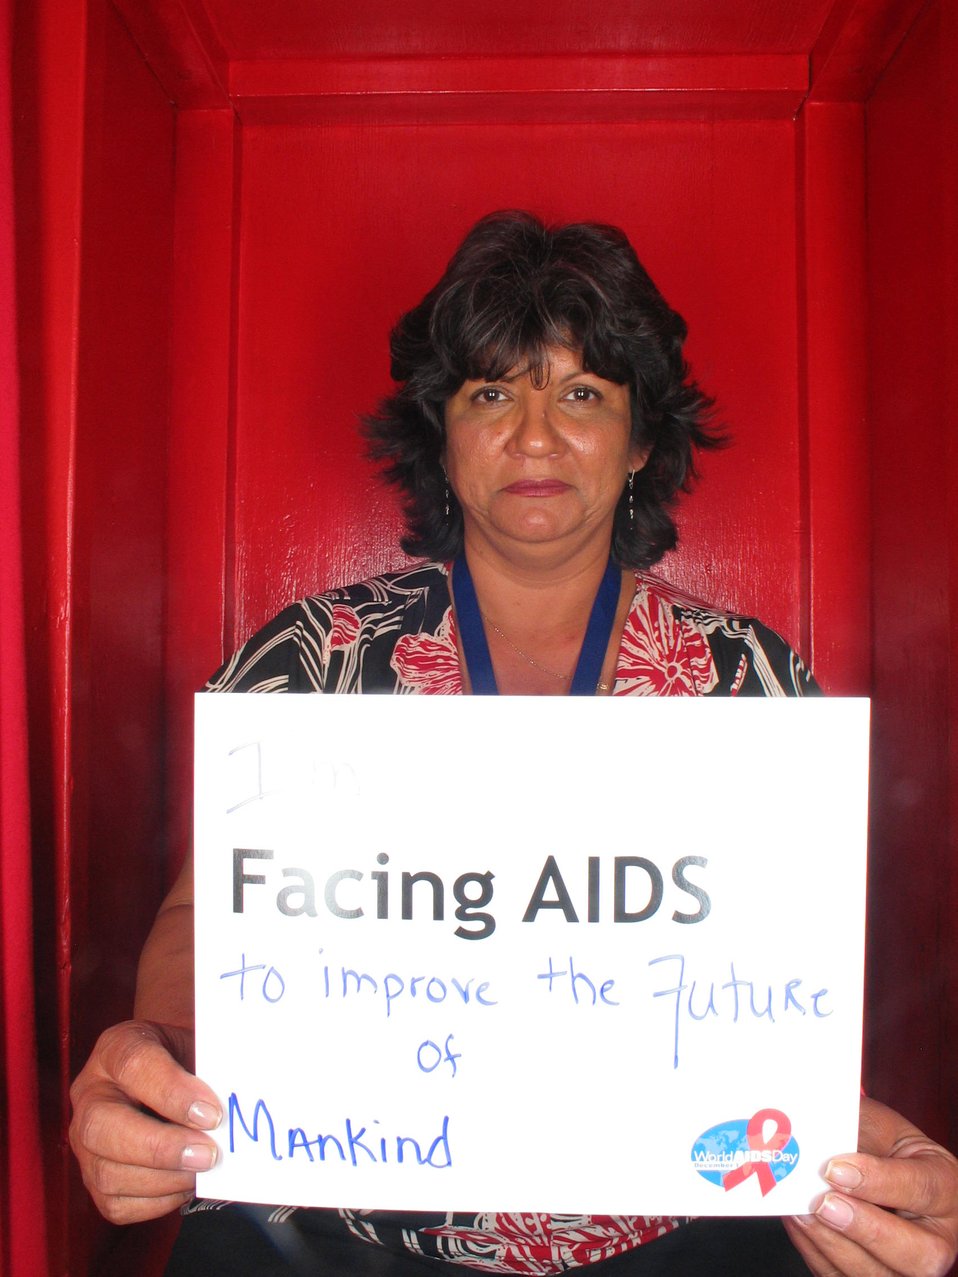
I'm Facing AIDS to improve the future of mankind.